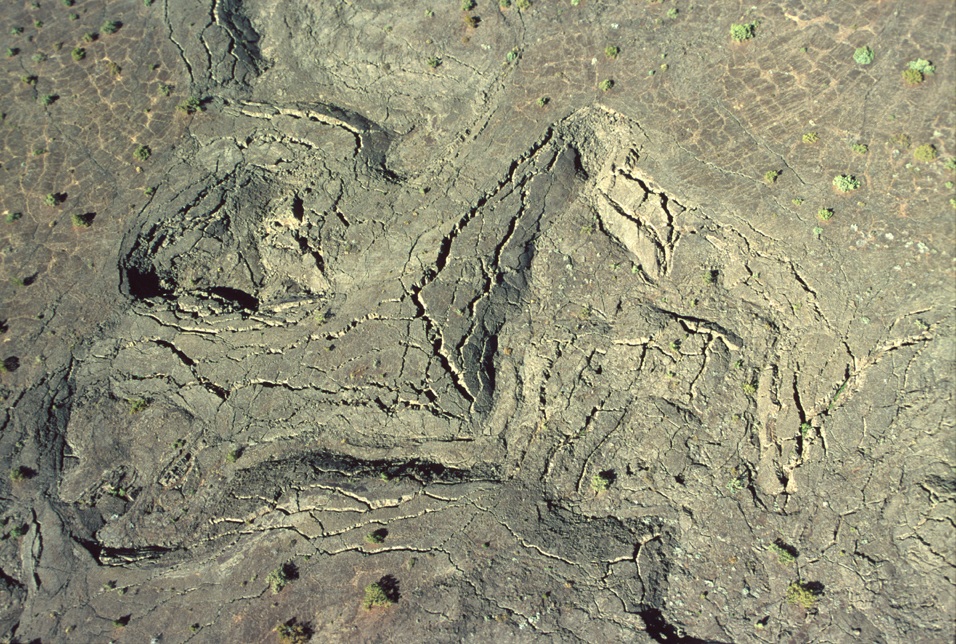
Shoshone Field Office USRD Upper Snake River District